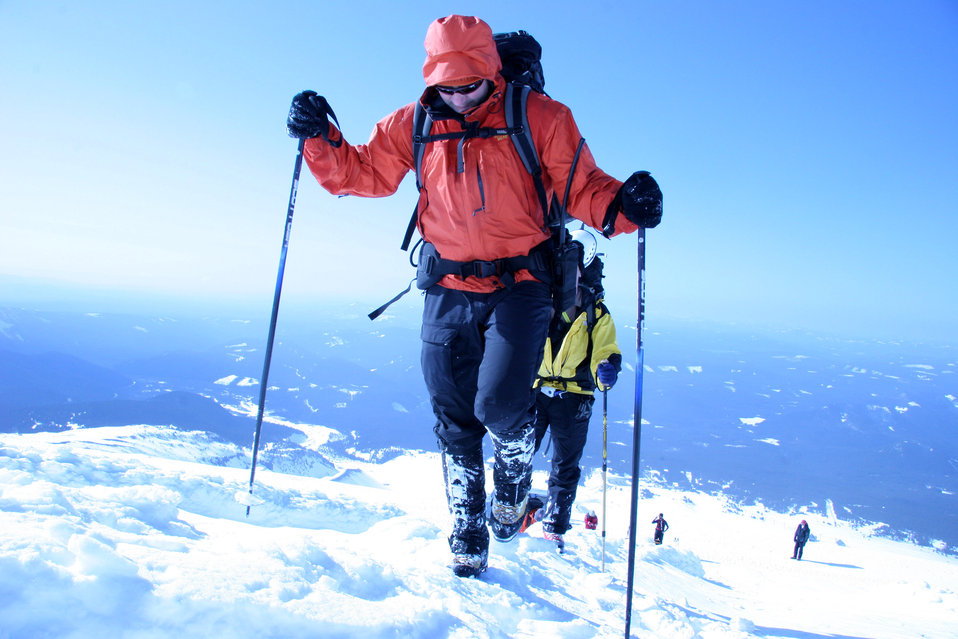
Joint exercise tests reservists' skills

Master Sgt. Eric Giacchino uses walking poles to climb Mount Hood while searching for two